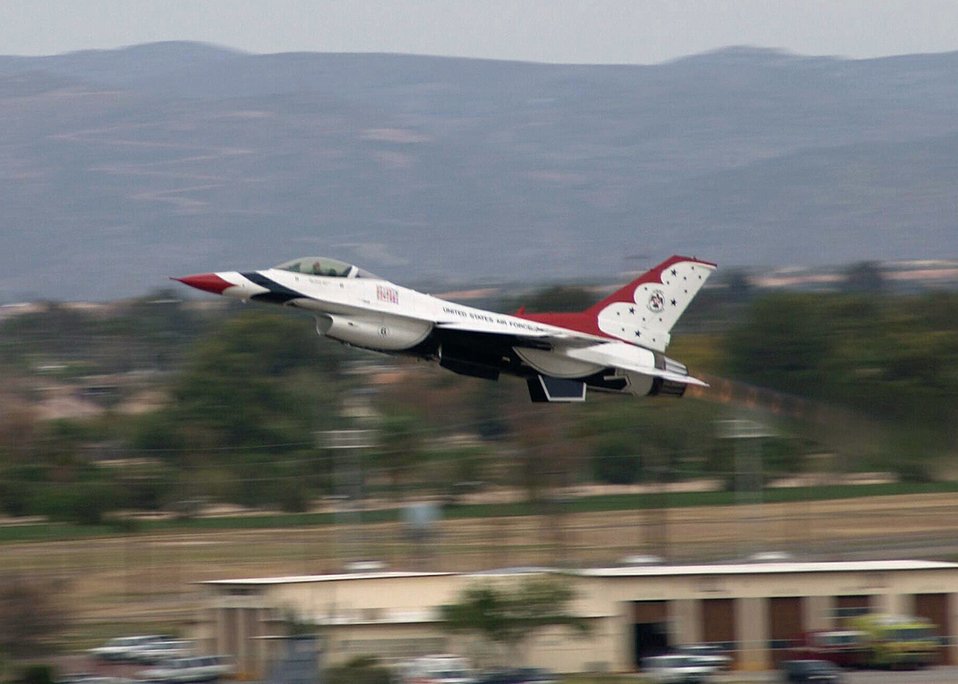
I spy rolling Thunder

DAVIS-MONTHAN AIR FORCE BASE, Ariz. -- A Thunderbirds F-16 Fighting Falcon takes off to begin the team's performance at an air show here. The No. 6 jet is flown by Maj. Brian Farrar. The team is stationed at Nellis Air Force Base, Nev.